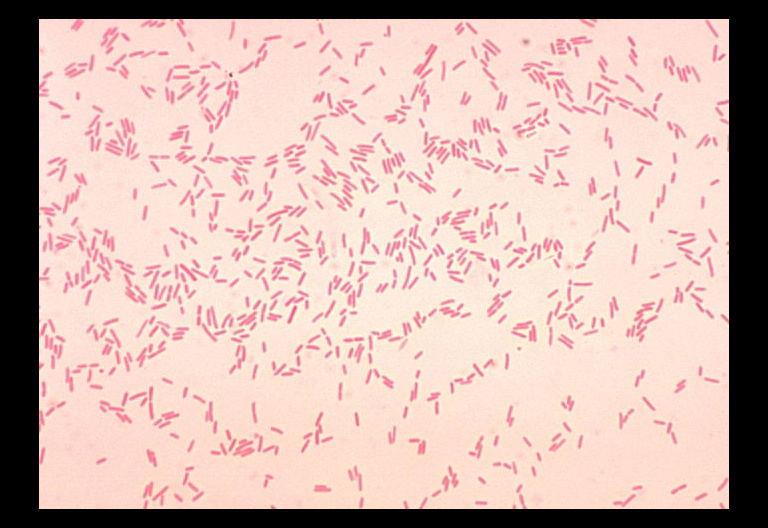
Bacillus circulans. Gram stain.